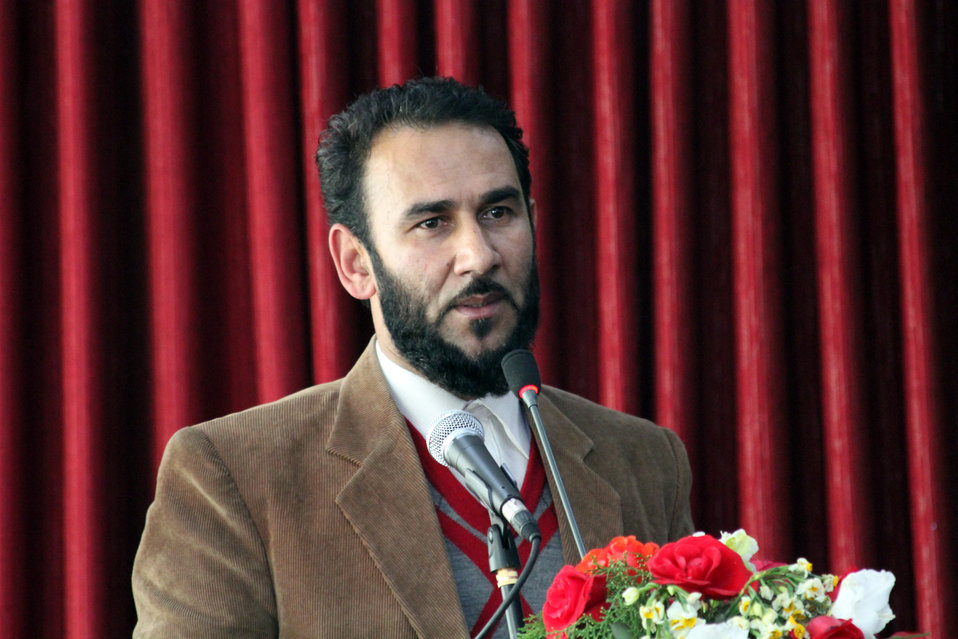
Afghanistan Final National Round of the 2013 Philip C.Jessup International Law Moot Court Competition